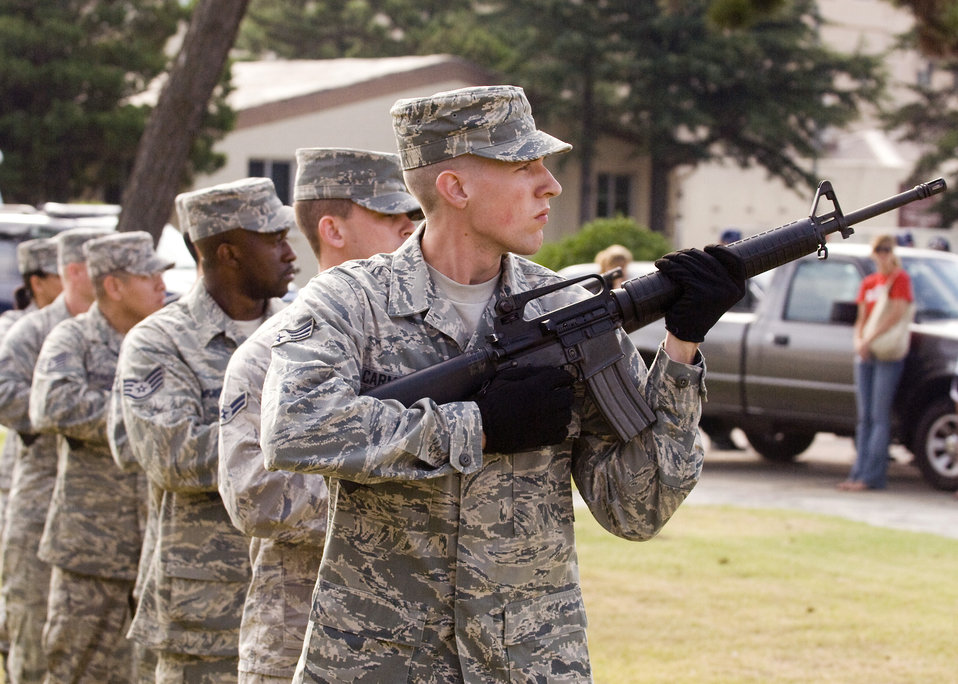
Rembering those who have fallen

Members of the base honor guard fires a rifle volley during the September 11 Patriot Day Ceremony Sept. 11, 2009, at Kunsan Air Base, Republic of Korea. The ceremony acknowledged the courageous firefighters, police officers, emergency responders and others who risked their lives to save the victims of the tragic events of Sept. 11, 2001. The ceremony also paid tribute to the men and women of the U.S. Armed Forces who have served in the military, whether deployed or at home station, since these events.